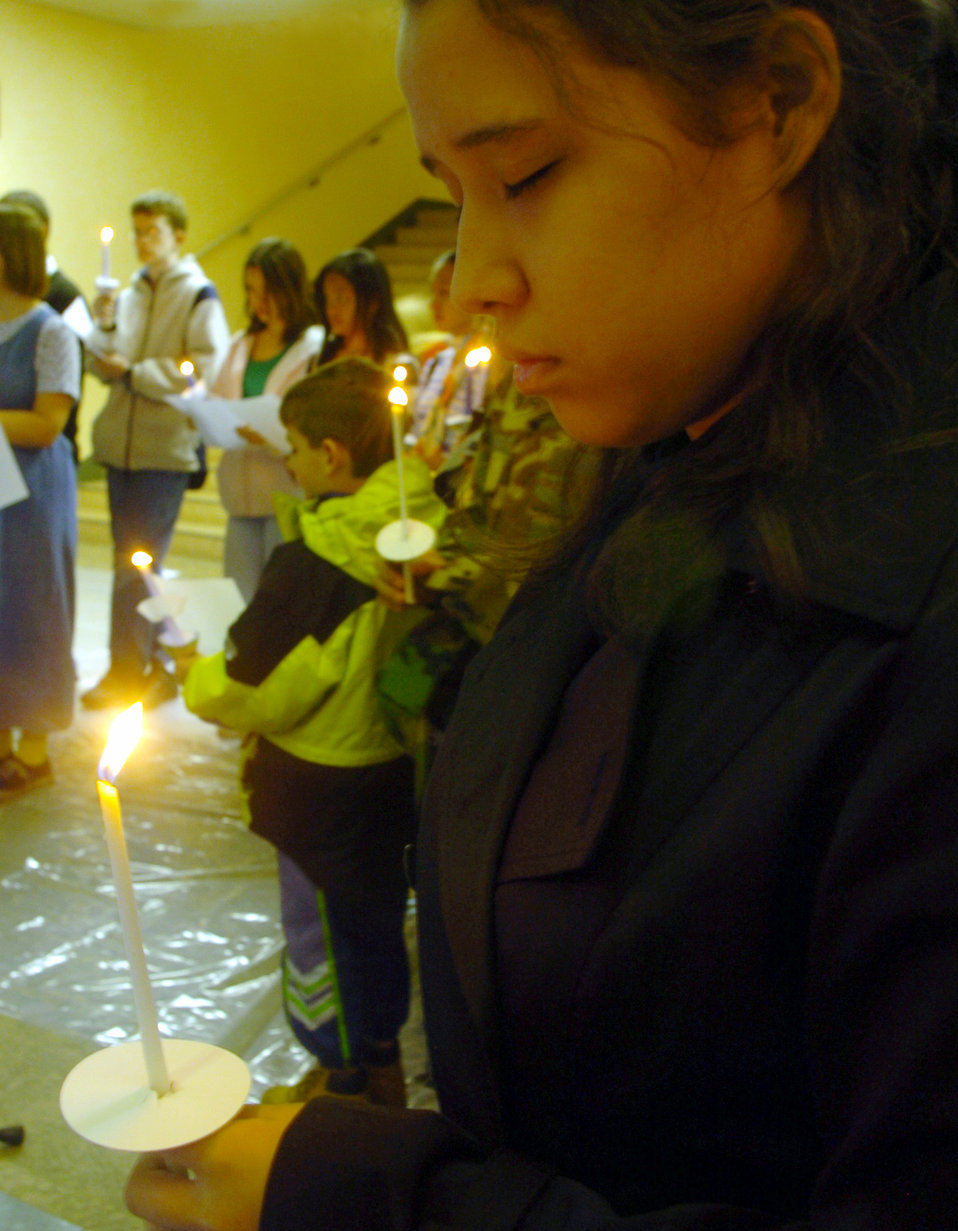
Candlelight vigil

YOKOTA AIR BASE, Japan -- Jennifer Badurski participates in a candlelight vigil here Feb. 11 for deployed troops. About 200 people paid tribute to American forces deployed worldwide. The ceremony included songs and prayers for the troops. Jennifer is a high school student here.